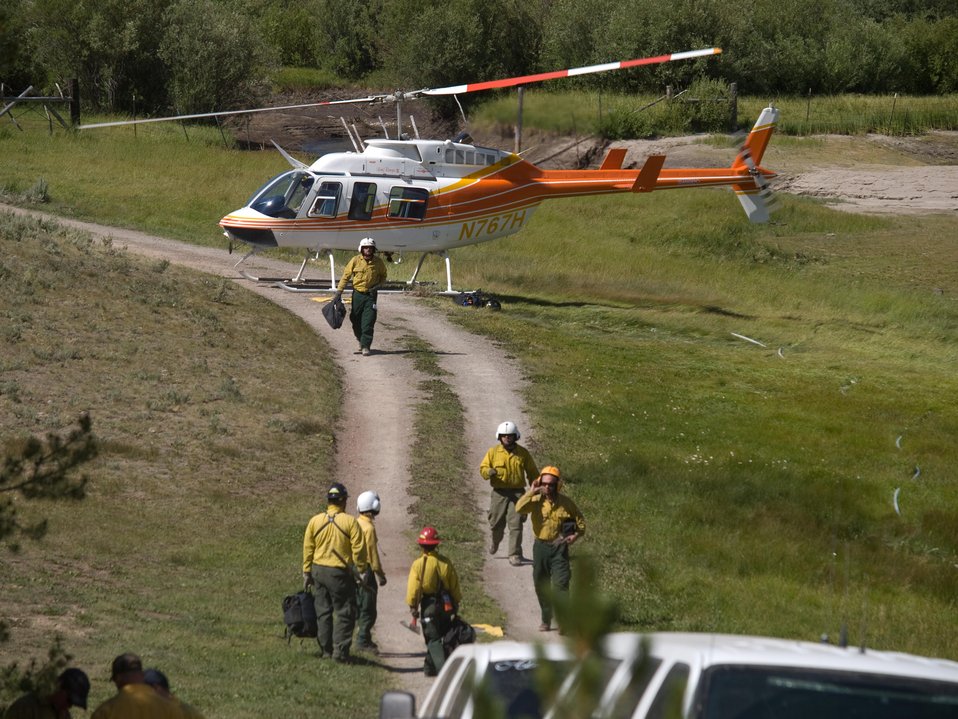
Fire crews are shuttled back and forth by helicopter to fire line of the Lodgepole Fire. The Lodgepole Fire in the Salmon-Challis National Forest near Challis, ID began on Jul. 20, 2013 by lightning has consumed approximately 20,080 acres and is approximately 15% contained.